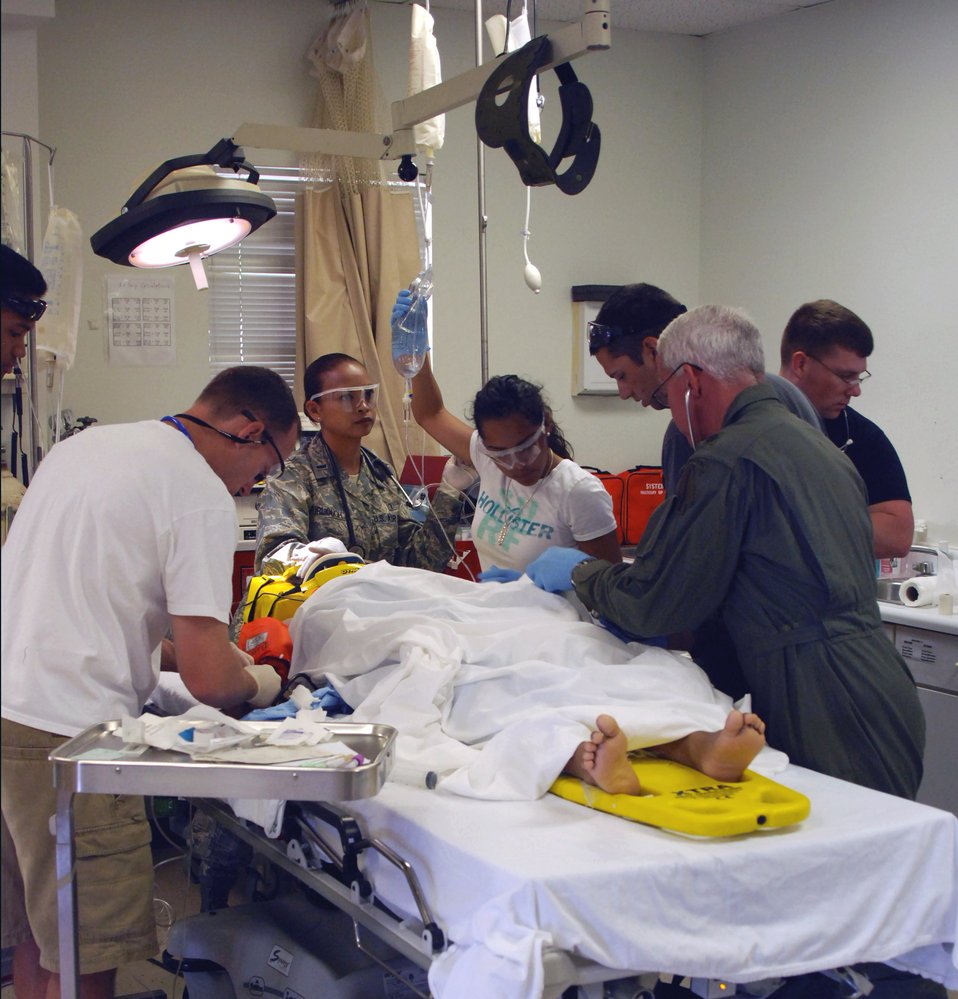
Servicemembers assist in Honduran medical emergency

Joint Task Force-Bravo Medical Element staff members stabilize a patient in preparation for air transport Feb. 26 from Soto Cano Air Base, Honduras, to Tegucigalpa, Honduras. More than 50 JTF-Bravo staff, as well as a crew from the 1-228th Aviation Regiment, assisted in transporting Hondurans severely injured in a roll-over accident to Hospital Escuela in Tegucigalpa.